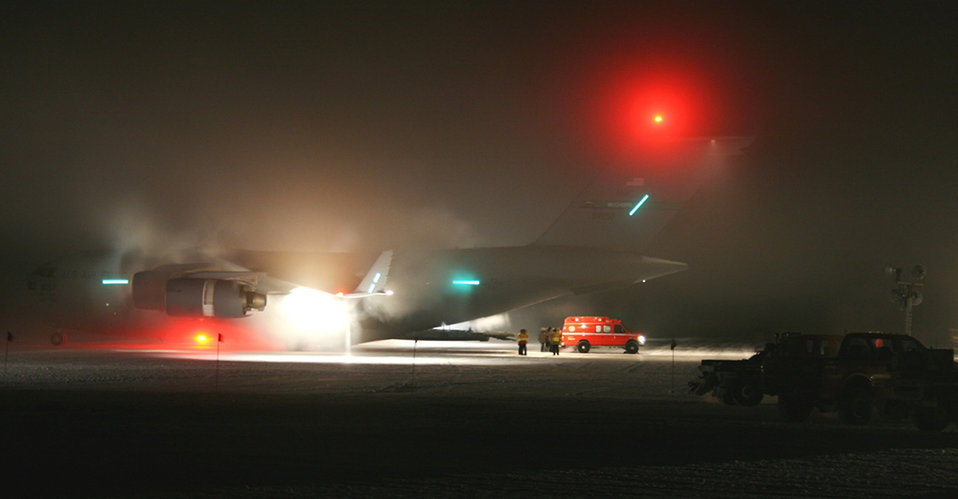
Cold as ice

A C-17 Globemaster III from McChord Field, Wash., sits on the ice June 30, 2011, in Antarctica awaiting a patient for a medical evacuation. A crew of 446th Airlift Wing reservists and 62nd Airlift Wing active-duty Airmen flew the mission using night-vision googles.